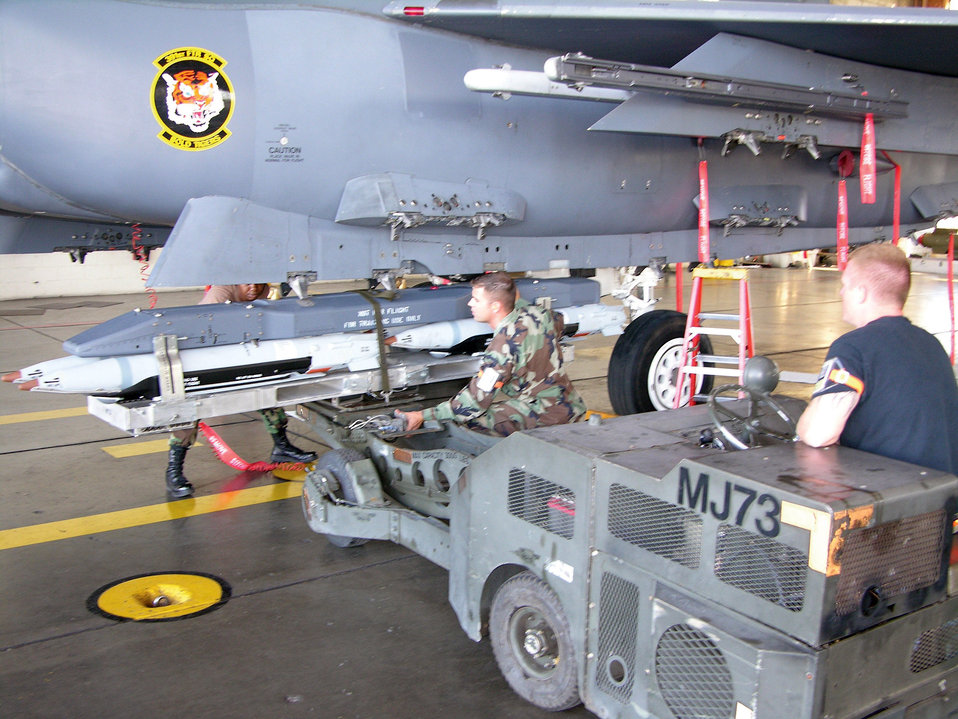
Airmen test new small diameter bomb system

MOUNTAIN HOME AIR FORCE BASE, Idaho -- A load crew Airman here uses a jammer to attach a pair of GBU-39 bombs to an F-15E Strike Eagle. An evaluation team trained and tested the crew on the new small diameter bomb.